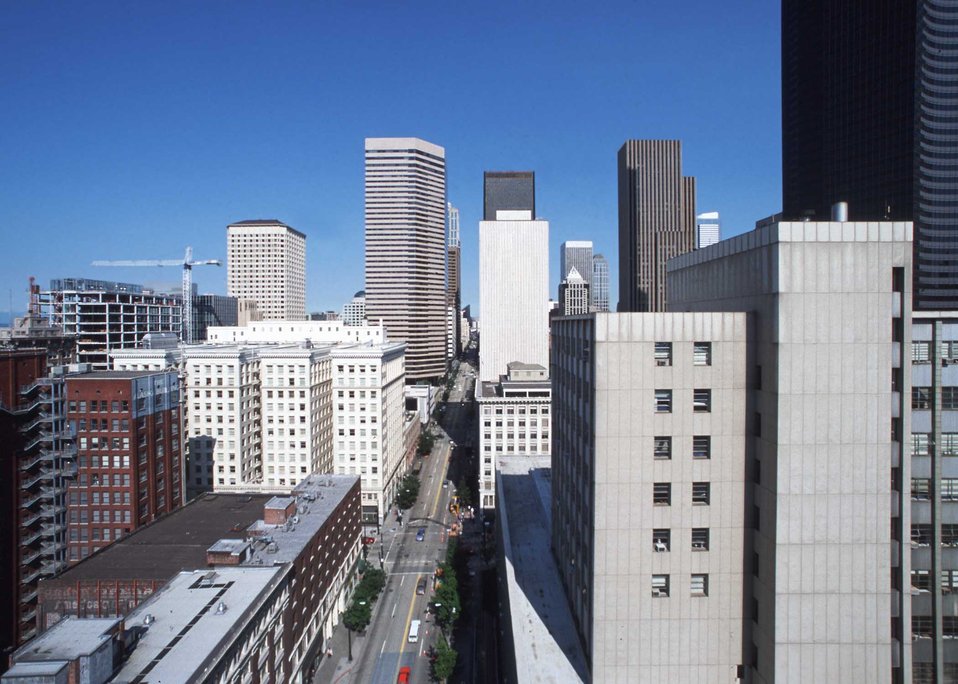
Scenic view of downtown Seattle, Washington.